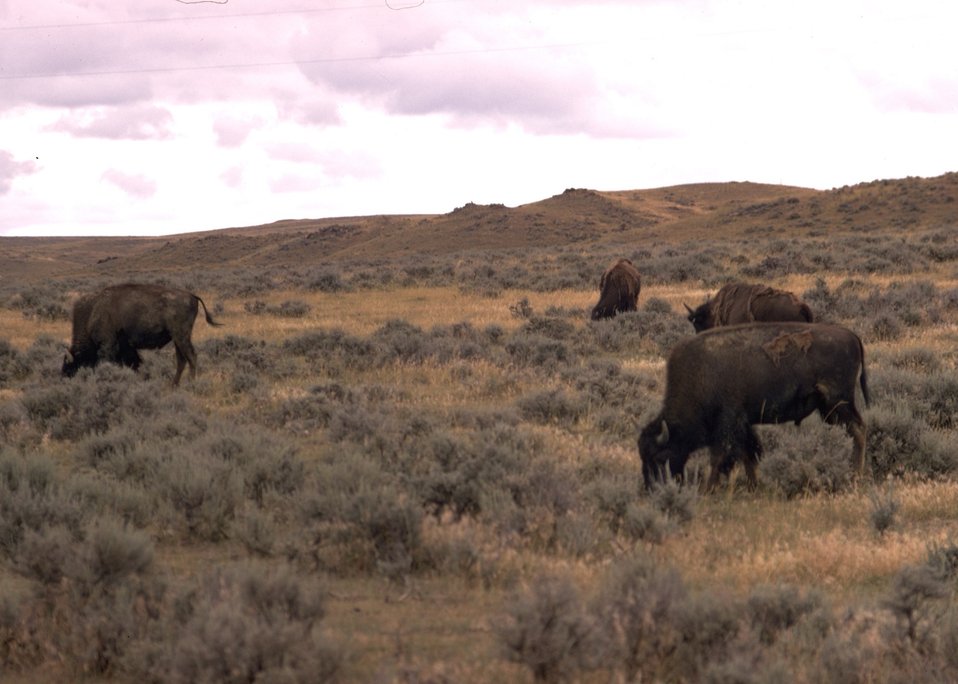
Buffalo grazing along sagebrush.